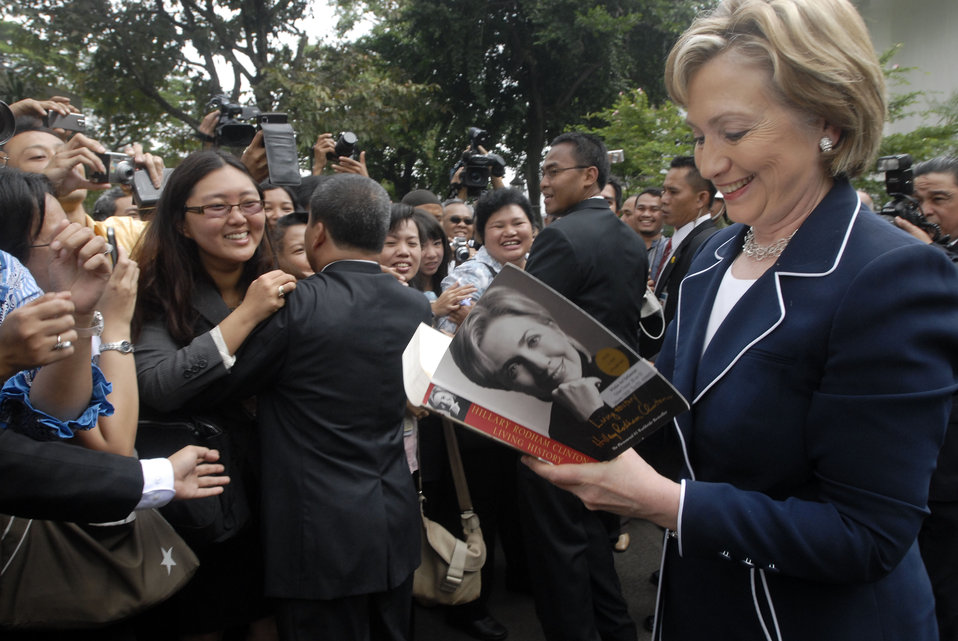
Secretary Clinton at Indonesian Presidential Palace

Secretary Clinton signing a book for an Indonesian citizen outside the Presidential Palace in Jakarta. in Jakarta, Indonesia February 19, 2009.